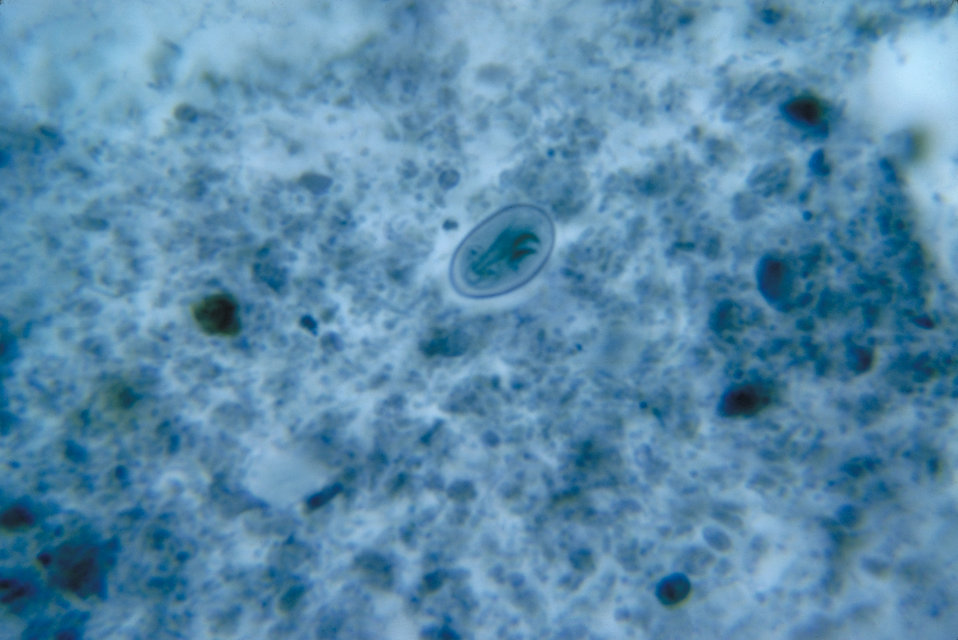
Giardia lamblia cyst. Chlorazol black stain. Parasite.